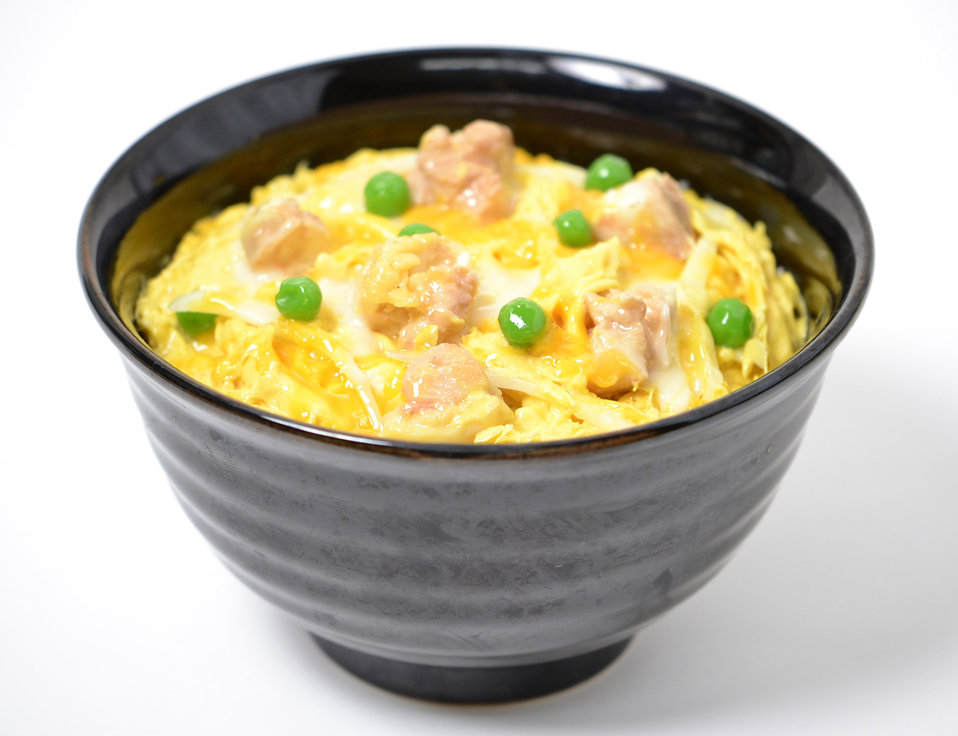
Oyakodon (chicken and egg on rice)

Bowl of rice with (soy‐and‐sugar‐seasoned) chicken, egg, and vegetables.